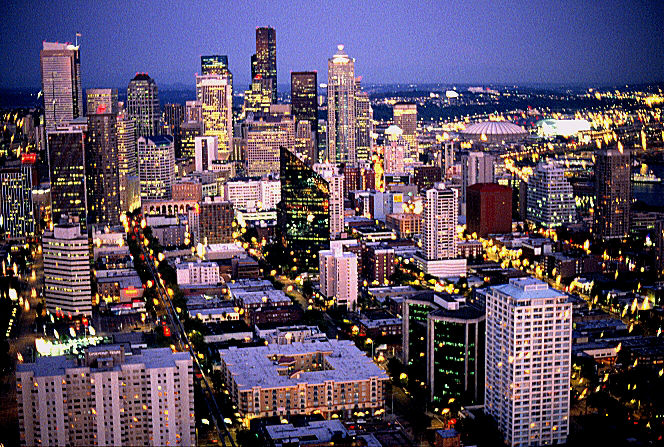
Seattle at nightfall, from top of Space Needle.